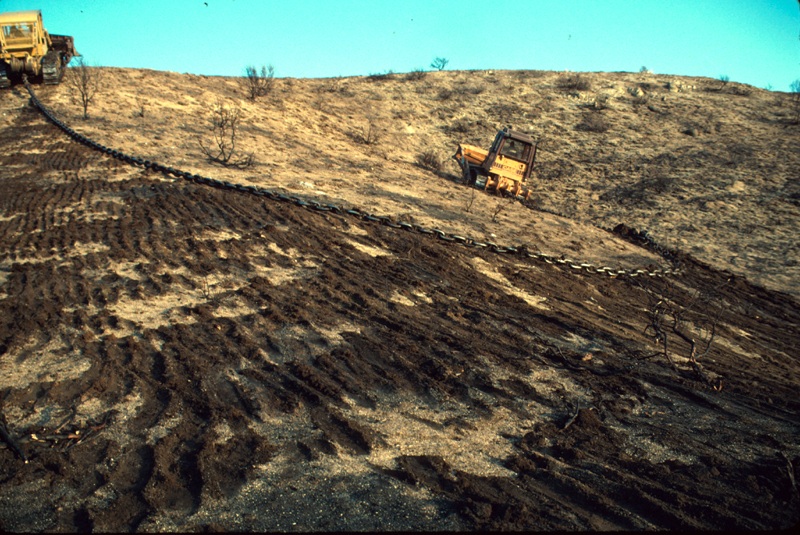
Four Rivers Field Office Foothills fire rehab Range Restoration Project Lower Snake River District